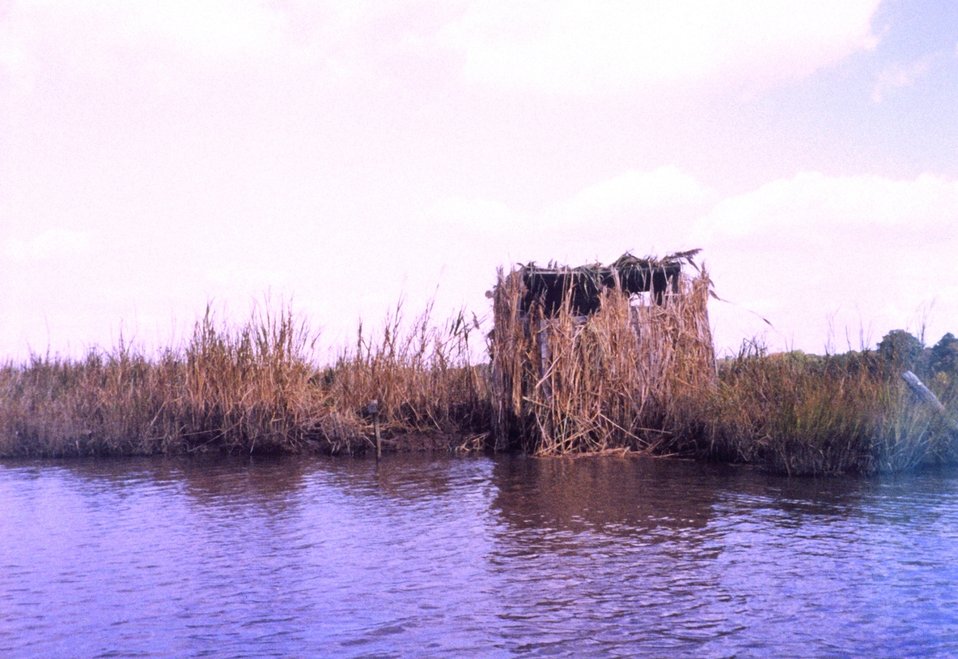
Duck blind.